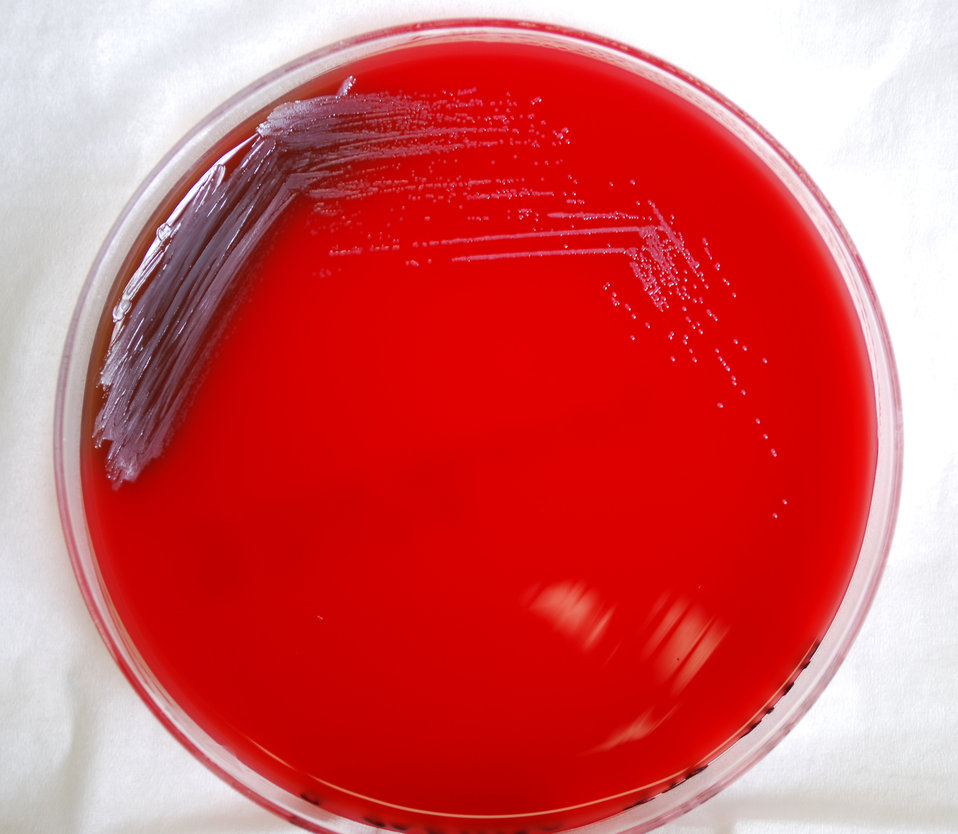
This photograph depicts the colonial morphology displayed by Gram-negative Burkholderia pseudomallei bacteria, which was grown on a medium of sheep's blood agar (SBA), for a 24 hour time period, at a temperature of 37�C. For a closer view of these bacterial colonies, see PHIL 12248.